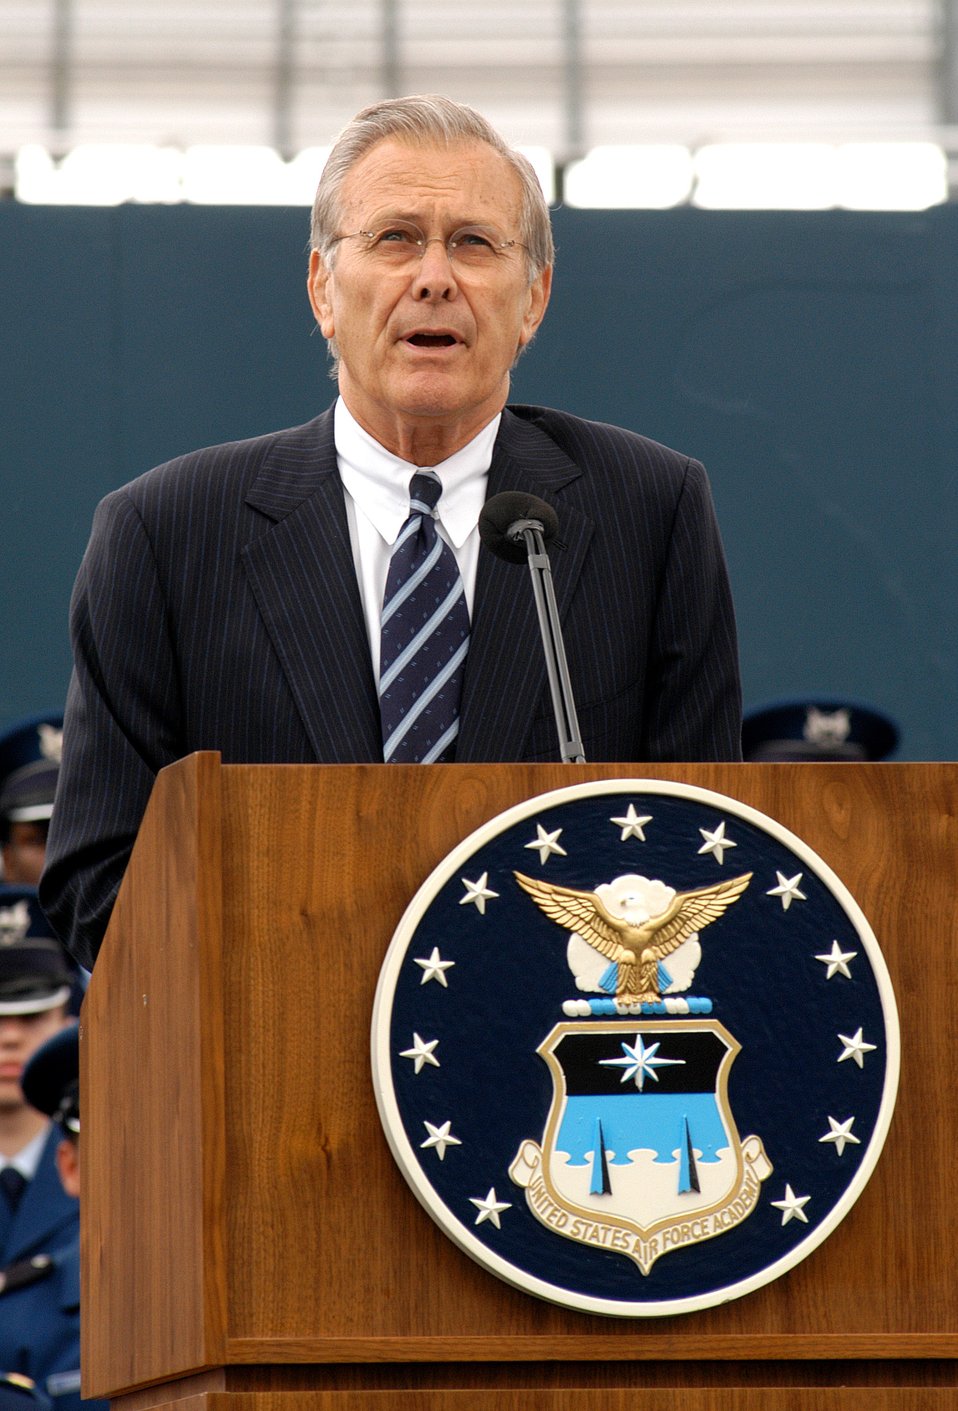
Rumsfeld voices confidence in academy graduating class

Secretary of Defense Donald H. Rumsfeld speaks at the graduation ceremony for the Class of 2006 at the U.S. Air Force Academy in Colorado Springs, Colo., on Wednesday, May 31, 2006.